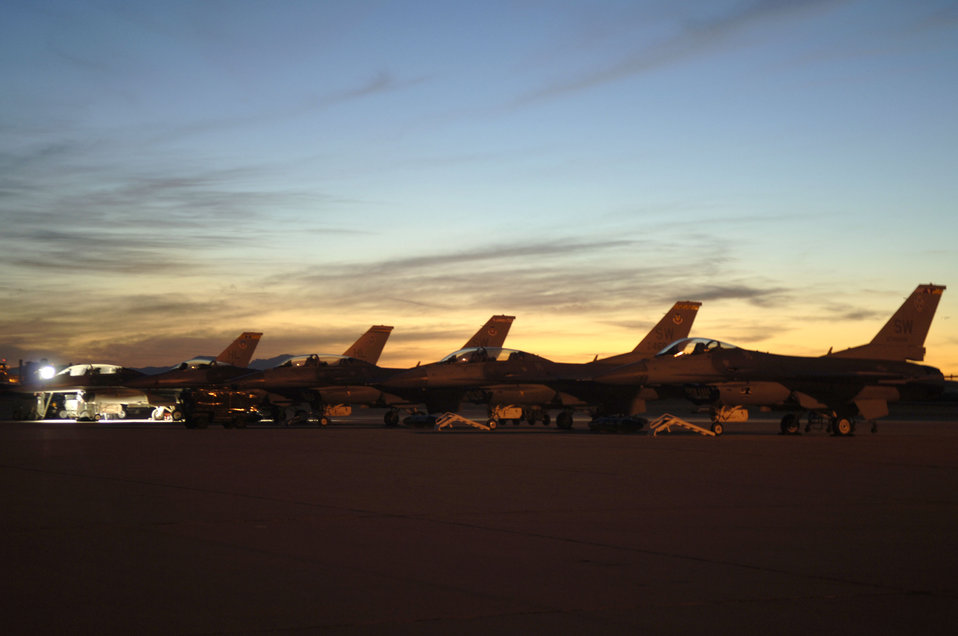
Demonstration team excels at Heritage Conference

Maintainers from the F-16 West Coast Demonstration Team work into the evening on F-16 Fighting Falcons after a day of aerial demonstration flying during the 2007 Heritage Conference at Davis-Monthan Air Force Base, Ariz. The conference provides an opportunity for ACC demonstration pilots to train together with modern and historic military aircraft in preparation for the upcoming air-show season. The West Coast team is assigned to the 388th Fighter Wing at Hill AFB, Utah.